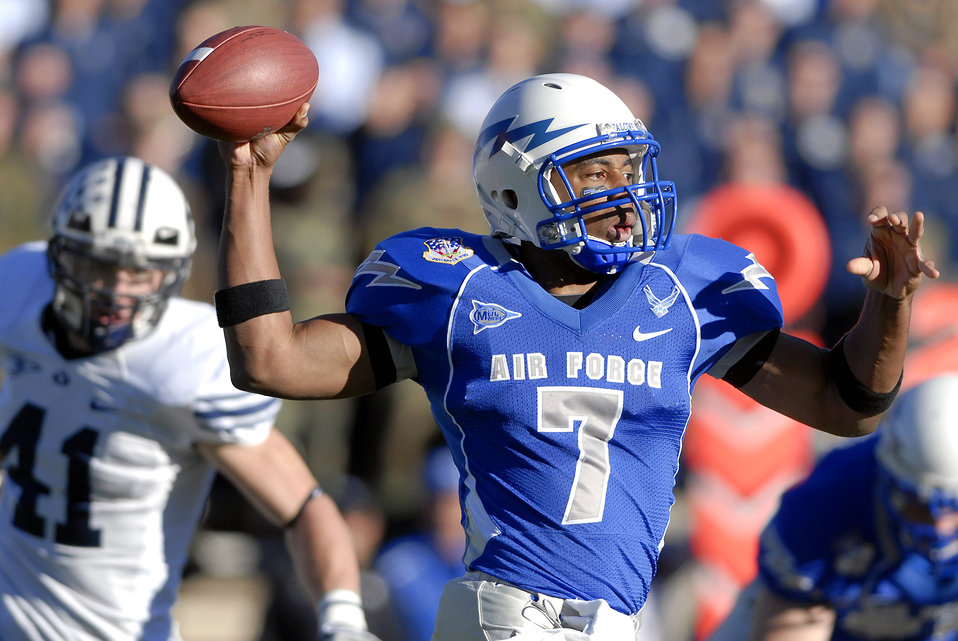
Look out behind you!

U. S. Air Force Academy freshman quarterback Tim Jefferson fires off a pass during the 38-24 loss against Brigham Young University Nov. 15 at the Academy's Falcon Stadium in Colorado. Jefferson finished the game with 75 rushing and 98 passing yards.